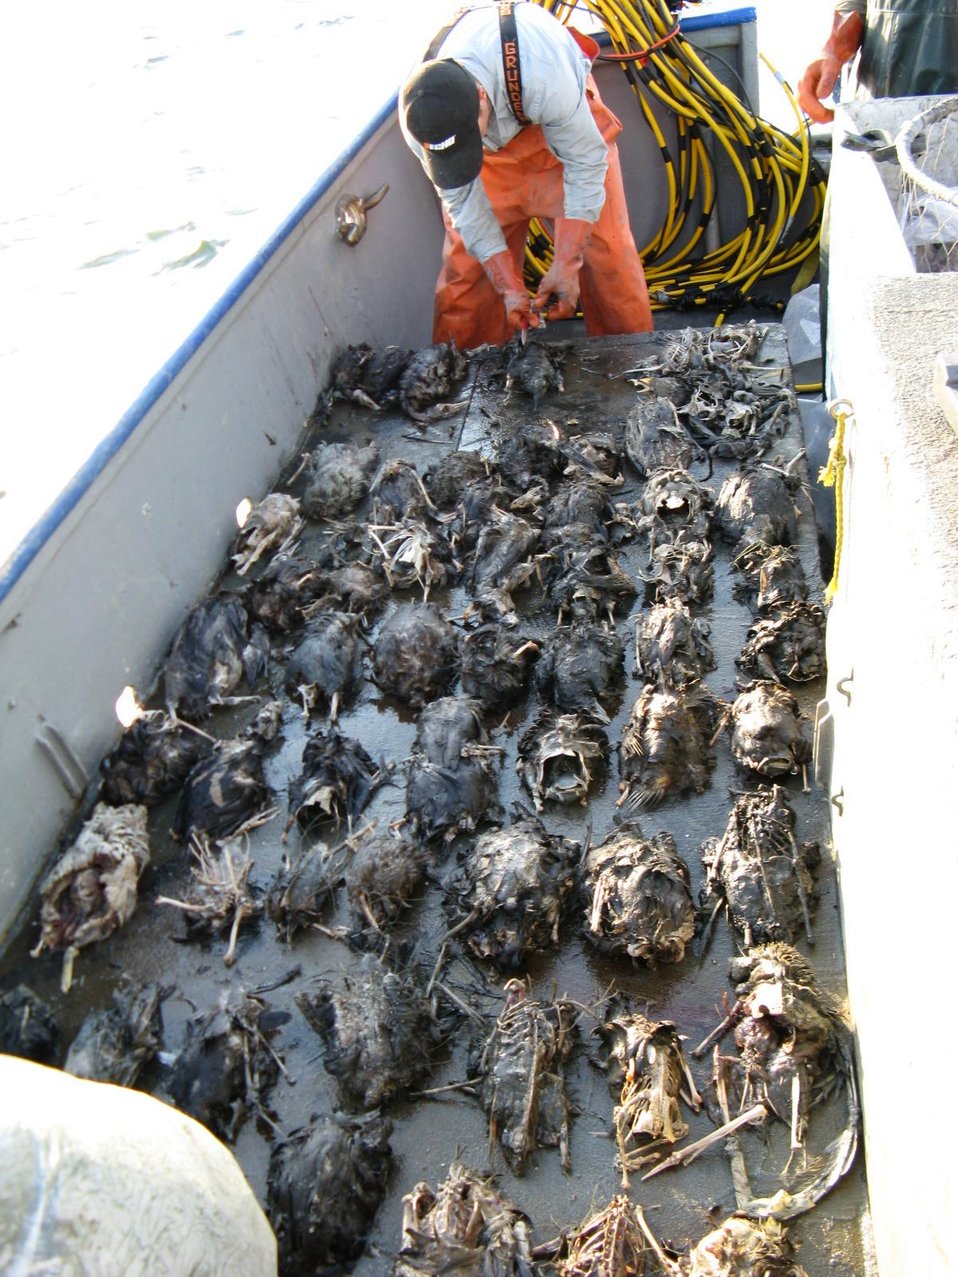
Bird carcasses found from the USFWS Puget Sound Coastal Program Derelict Fishing Gear Project, Credit USFWS Joan Drinkwin

The USFWS Coastal Program in Puget Sound, Washington has worked over the last six years to collect derelict fishing gear. They have recovered 3,600 partial gillnets, averaging 7,000 square feet each, which has eliminated the needless deaths of more than 1.1 million marine mammals, fish, birds and invertebrates each year.